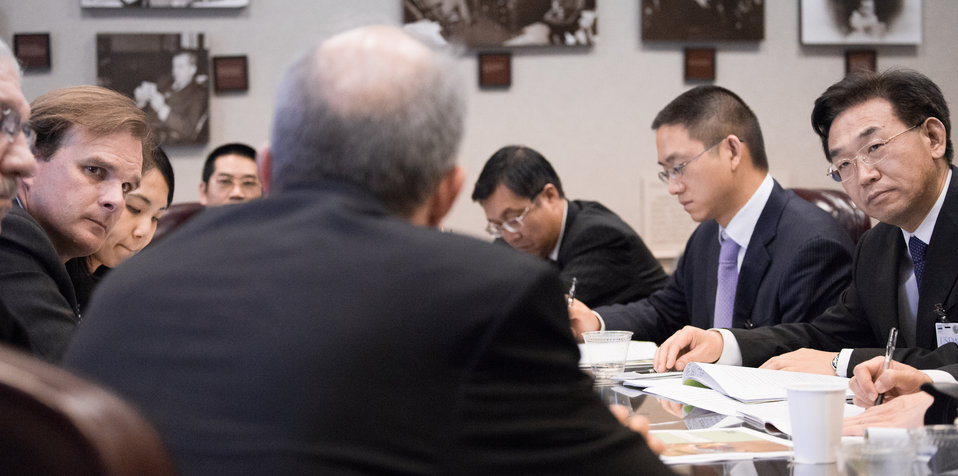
Office of the Chief Economist (OCE) Climate Change Program Director William Hohenstein, center, answers a question from the People’s Republic of China Ministry of Agriculture (MOA) Vice Minister H.E. Zhang Taolin, right, who heads a Chinese Agricultural Delegation, meeting with U.S. Department of Agriculture (USDA) Under Secretary for Natural Resources and Environment (NRE) Robert Bonnie, left, and other USDA leaders at the USDA headquarters Whitten Building, in Washington, D.C., on Friday June 13, 2014. Also in the China delegation is MOA Department of Finance Director-General Li Jianhua, Department of International Cooperation Deputy Director-General Xie Jianmin and Wei Zhenglin*, General Office Section Chief Jiang Yekui, Department of International Cooperation Program Officer Jin Taicheng, and Center of International Cooperation Service Interpreter Wan Ye. Bonnie’s group includes Natural Resources and Environment (NRE) Deputy Under Secretary Butch Blazer, Natural Resources Conservation Service (NRCS) Science and Technology Deputy Chief C. Wayne Honeycutt, Ph.D., USDA Foreign Agricultural Service (FAS) Associate Administrator Suzanne Palmieri, NRCS Farm Bill Programs Assistant State Conservationist Gerald L. Roach, and Forest Service (USFS) and International Programs Asia Program Specialist Darcy Nelson and FAS Office of Country And Regional Affairs (OCRA) China and Hong Kong Desk Officer Lauren McGraw.